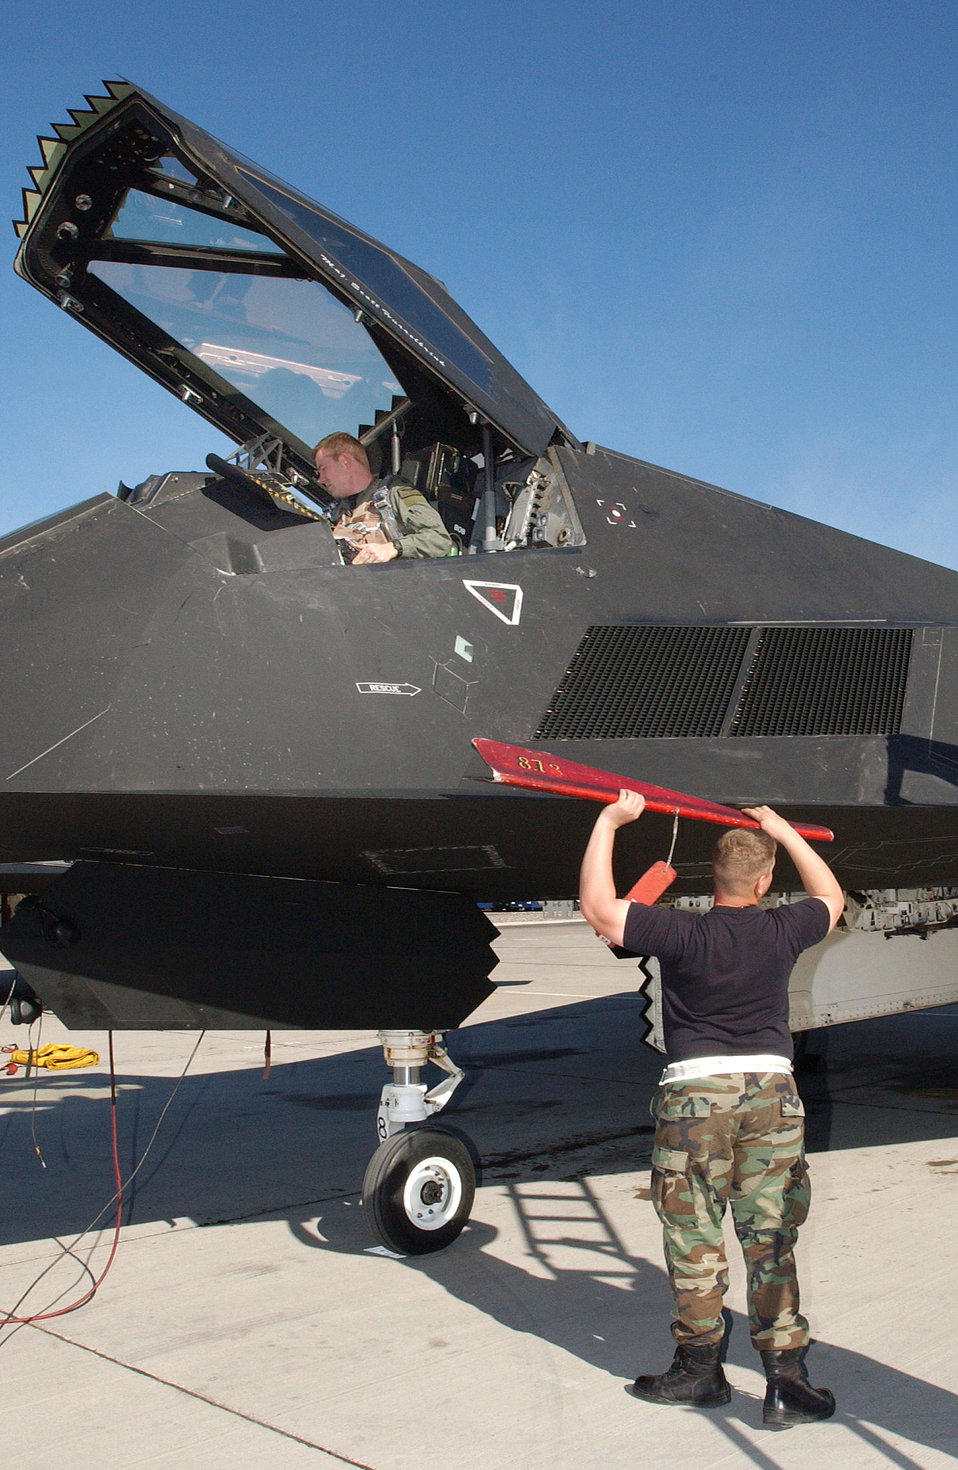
Nighthawk at Red Flag

NELLIS AIR FORCE BASE, Nev. (AFPN) -- Airman 1st Class Keith Hartman removes the ladder guard after Capt. Erik Jacobson climbs into the cockpit during Red Flag 06-1, here Jan. 21 to Feb. 18. Red Flag is an exercise that tests aircrews' warfighting skills. Flights involve more than 100 aircraft, including B-52 Stratofortresses and F-16 Fighting Falcons. The aircraft are flying missions day and night to the nearby Nevada Test and Training Range where they simulate an air war. Along with the Air Force, units from the Army, Navy, NATO and several allied countries are participating. Captain Jacobson is an F-117A Nighthawk pilot with the 49th Fighter Squadron at Holloman Air Force Base, N.M. Airman Hartman is an electrical engineering specialist with the 49th Aircraft Maintenance Squadron.